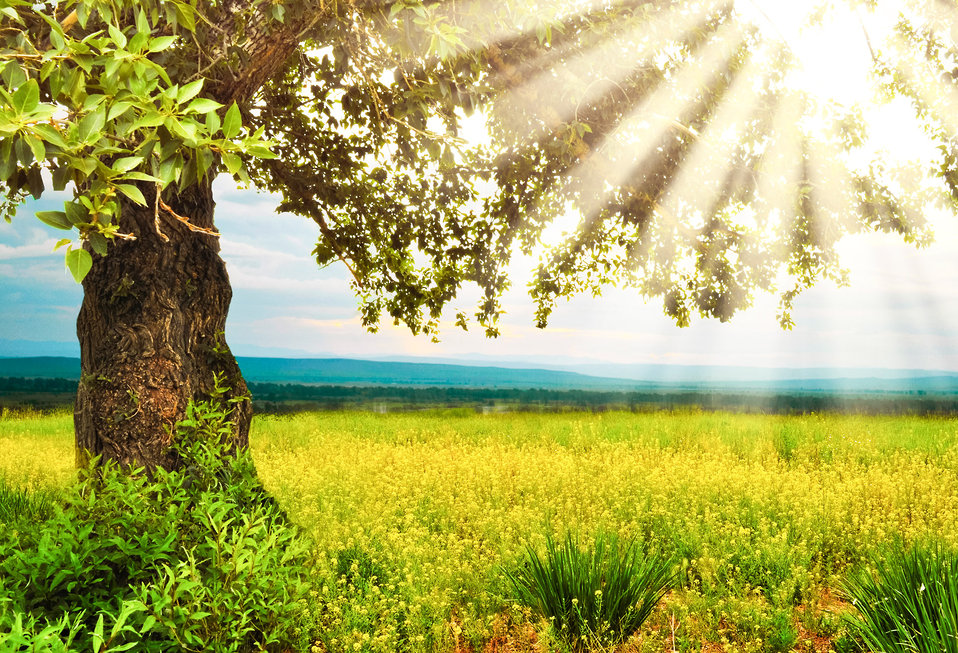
Summer day

Bright landscape with blossoming field and a tree in the foreground. collage..